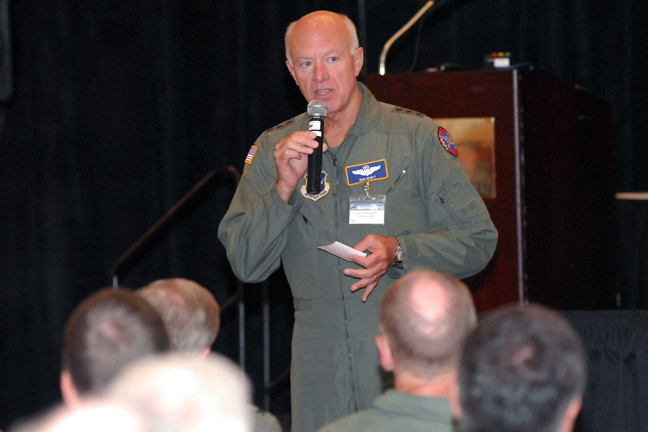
General stresses safety to Airmen

Lt. Gen. Harry M. Wyatt, III, director of the Air National Guard, speaks with guardsmen safety personnel at the Air Guard Executive Safety Summit held Aug. 4 in St. Louis.